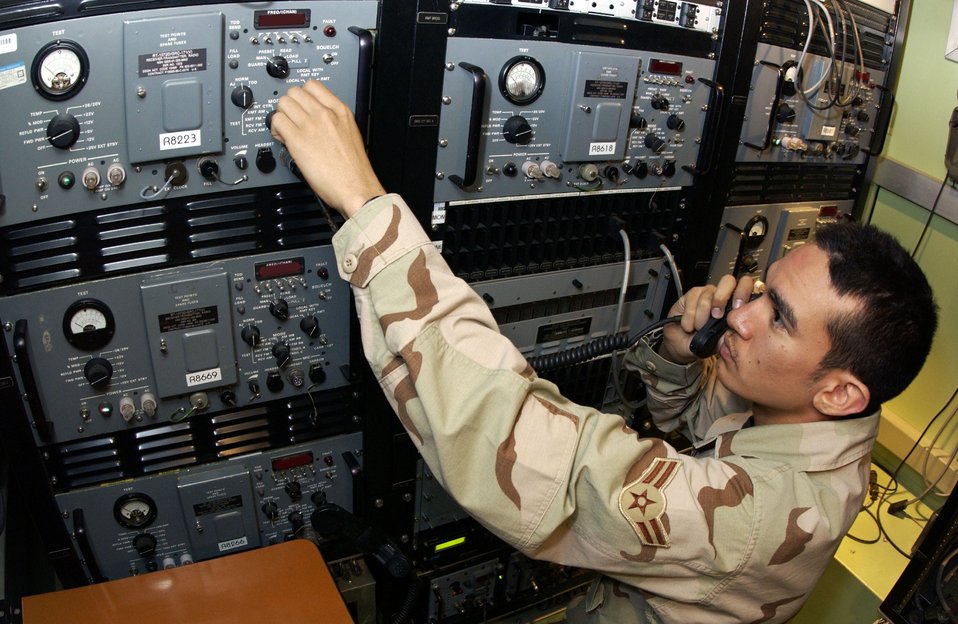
I can see you

Airman 1st Class Jerome Holley performs a systems check on an AN/TRC-215 remote radio van Feb. 27 at Kirkuk Air Base, Iraq. The AN/TRC-215 allows air battle managers located at Balad AB, Iraq, to communicate with aircraft flying in northern Iraq. Airman Holley is a ground radio systems techinician with the 727th Expeditionary Air Control Squadron.